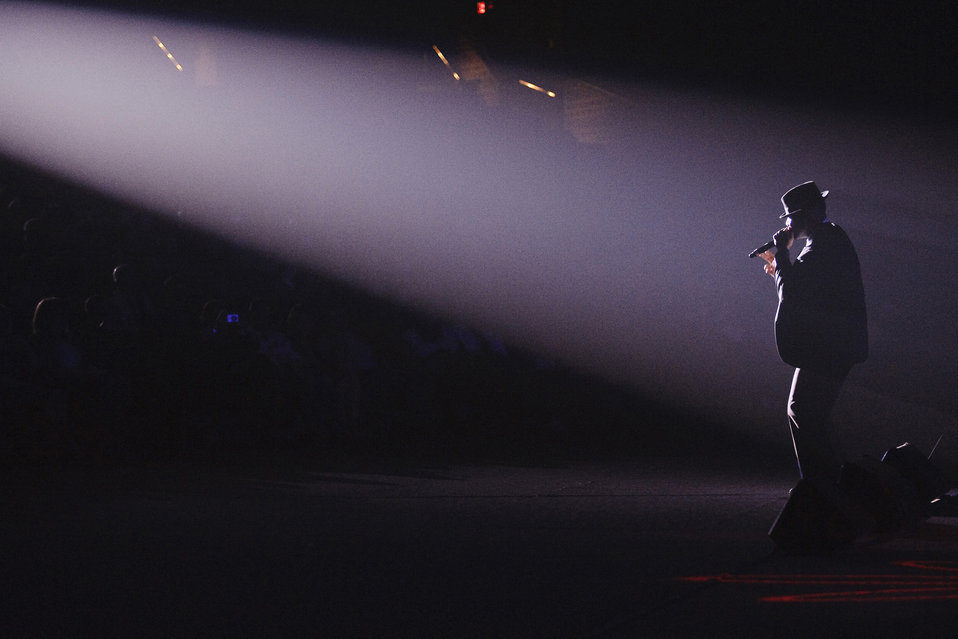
TIB wrap up tour

A member of Tops In Blue performs a solo during the final concert of the 2010